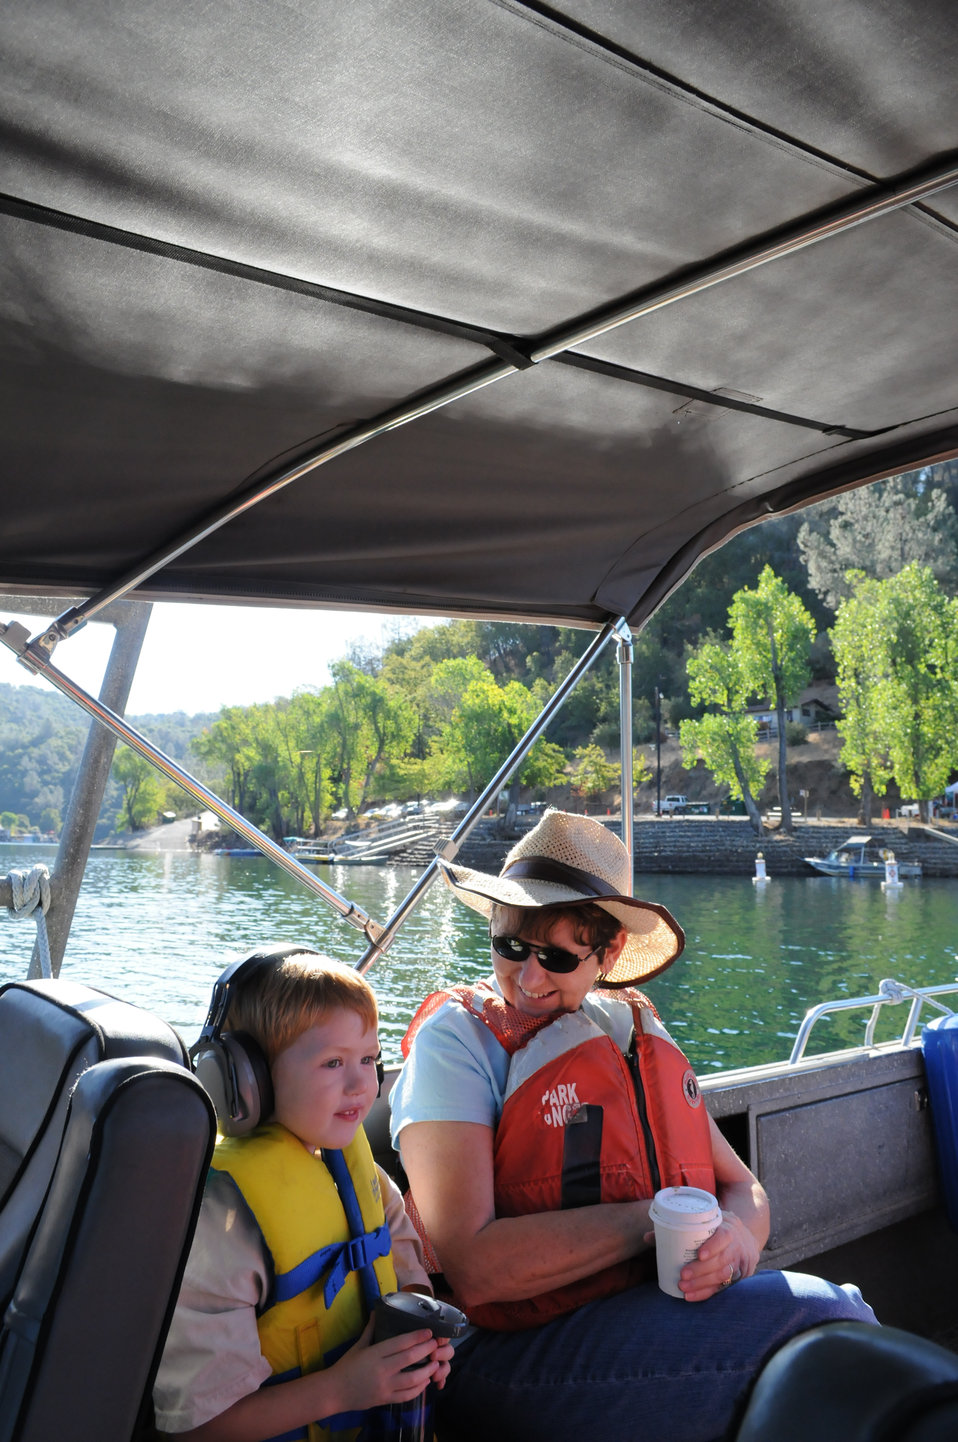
ENGLEBRIGHT LAKE, Calif. (Sept. 25, 2010) -- Volunteers ride to a boat-in campground to collect litter with fellow volunteers here during the 17th annual National Public Lands Day Sept. 25. Park rangers from the U.S. Army Corps of Engineers Sacramento District and more than 55 volunteers celebrated the day with cleanup efforts at the park, which yielded more than 300 pounds of trash. The Corps has been involved with National Public Lands Day since its inception in 1994 and has consistently been one of the largest providers of sites and volunteers participating in the event. This year, the celebration coincides with California Coastal Cleanup Day and President Barack Obama’s America’s Great Outdoors Initiative, an effort to promote the conservation of outdoor spaces and reconnect Americans to the outdoors.